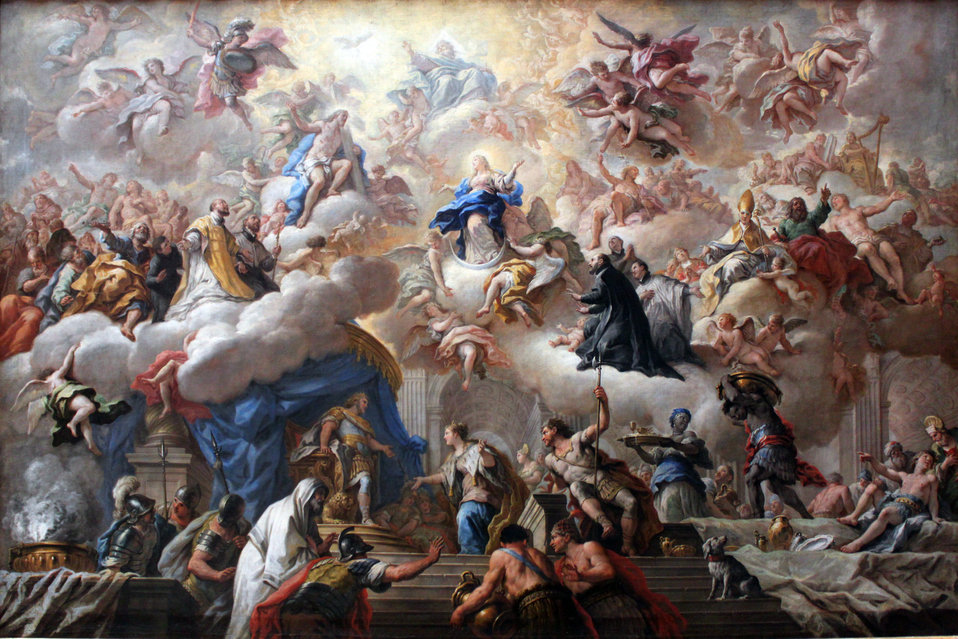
1710-15 de Matteis Triumph of the Immaculate anagoria